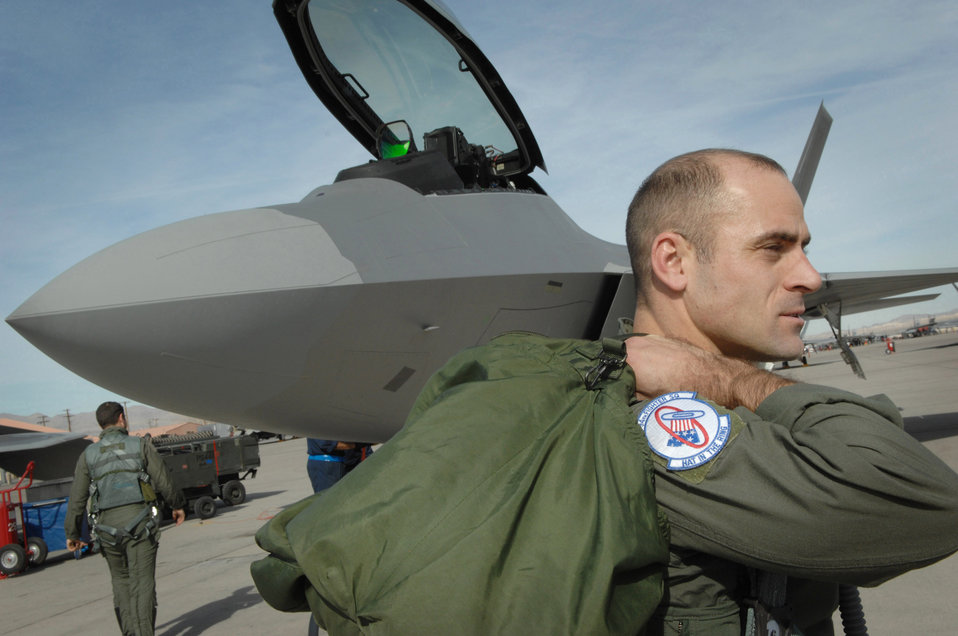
Ready to rumble

Capt. Merrick Baroni steps out to his F-22 Raptor Feb. 6 after landing at Nellis Air Force Base, Nev., to participate in Joing Red Flag 07-02. Red Flag sharpens aircrews' war-fighting skills in realistic combat situations. Captain Baroni is assigned to the 94th Fighter Squadron from Langley AFB, Va.